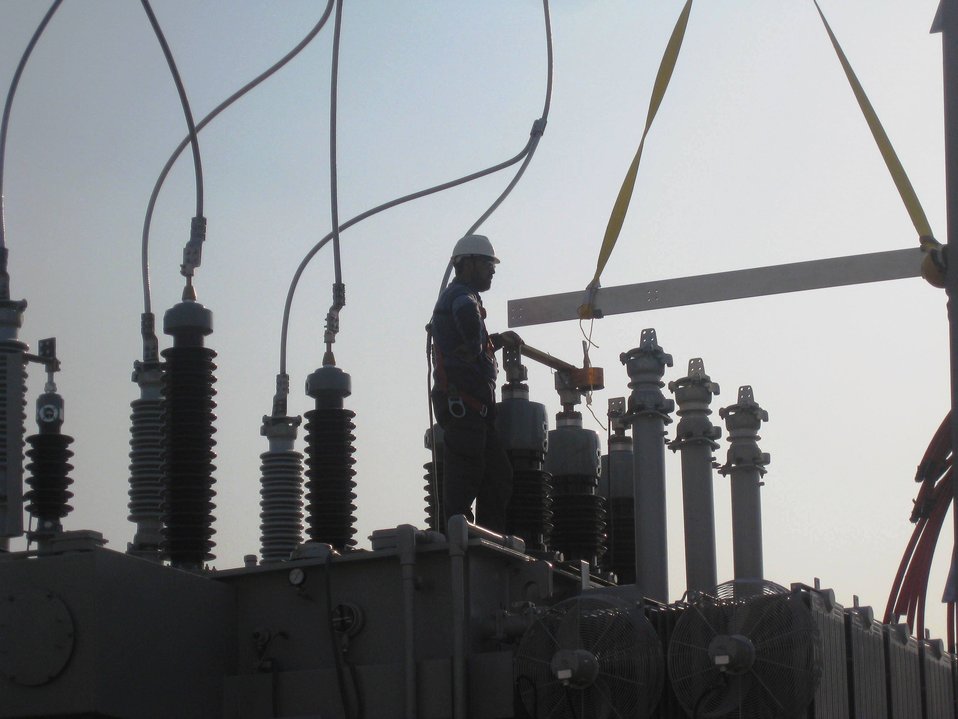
Power